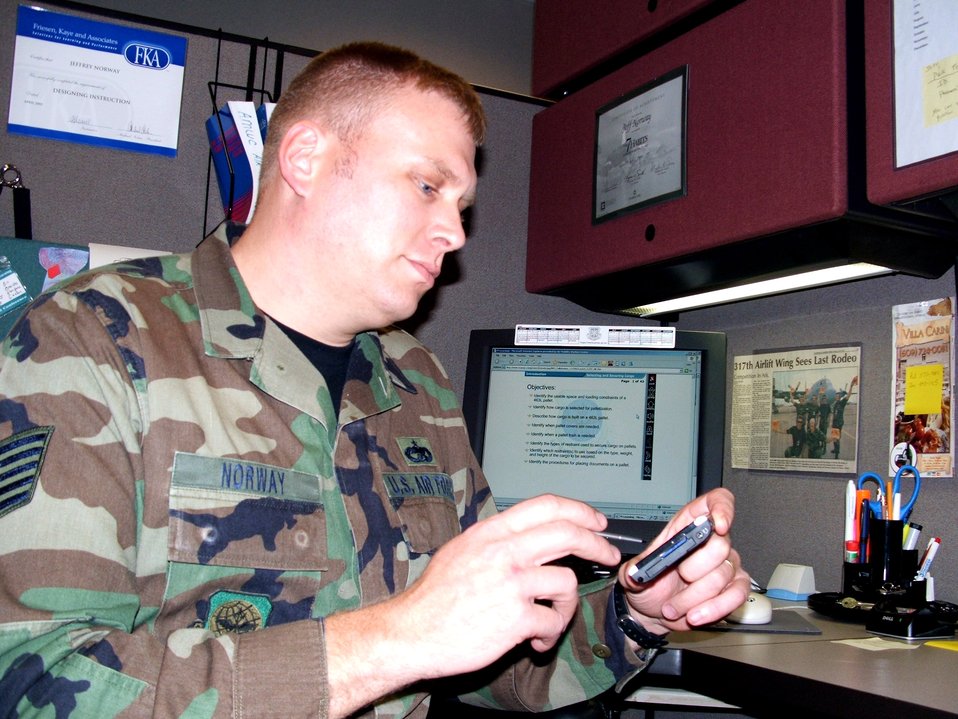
Air transportation career field beneficiary of mobile learning initiative

FORT DIX, N.J. (AFPN) -- Tech. Sgt. Jeff Norway programs a personal digital assistant device for use in the Air Mobility Warfare Center mobile learning initiative for the Air Force air transportation career field.